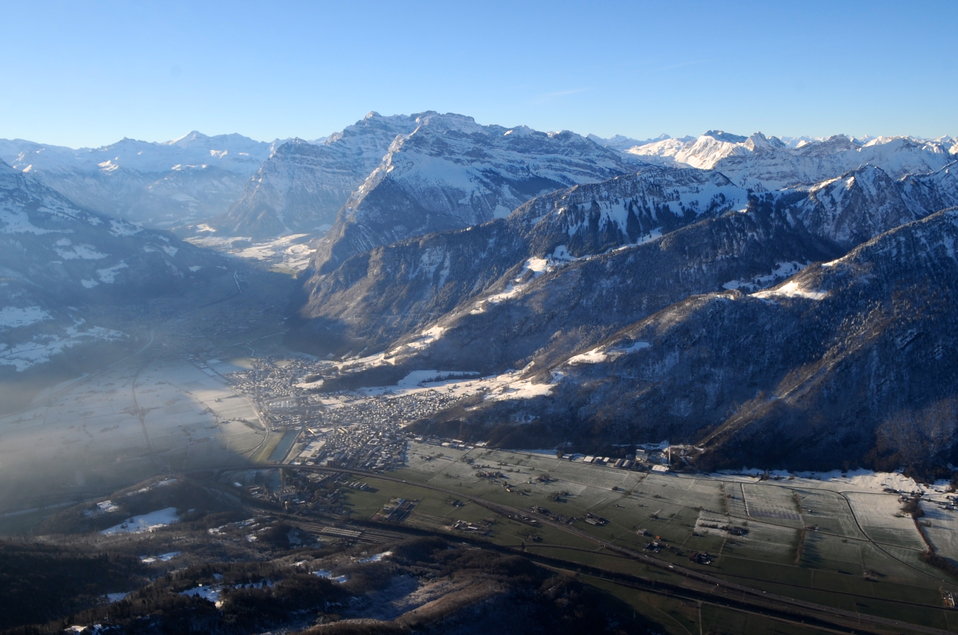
A Swiss Mountain Village

A village sits on a valley floor beneath the Swiss Alps, as seen from the helicopter carrying U.S. Secretary of State John Kerry as he flew between Davos, Switzerland, and Zurich on Jan. 25, 2014.[State Dept. Photo/Public Domain]